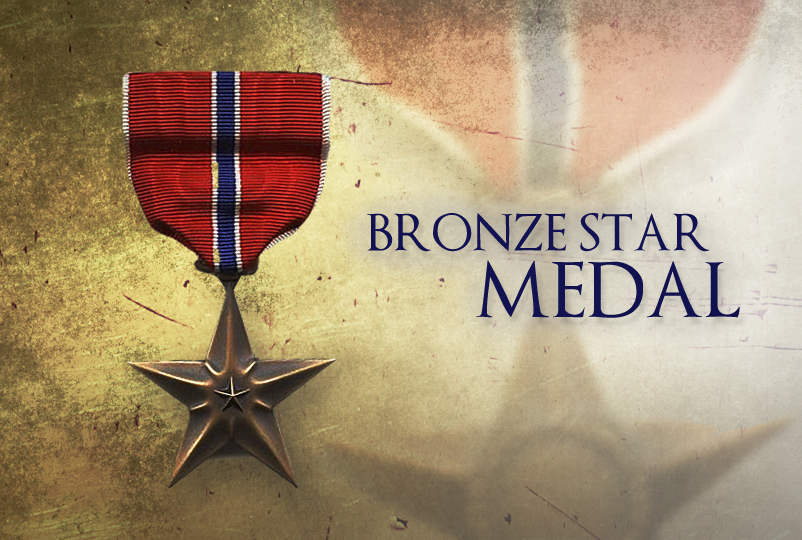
Bronze Star Medal